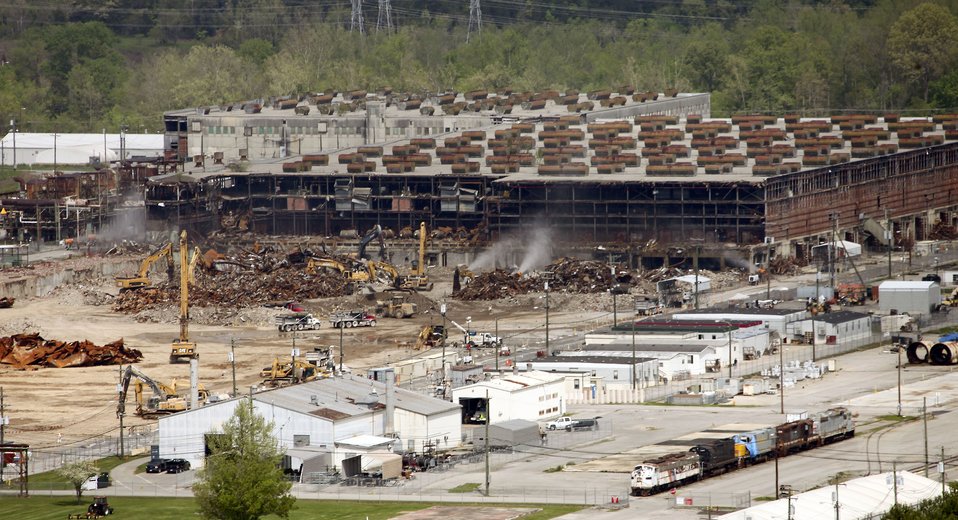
Demolition Progress at Oak Ridge